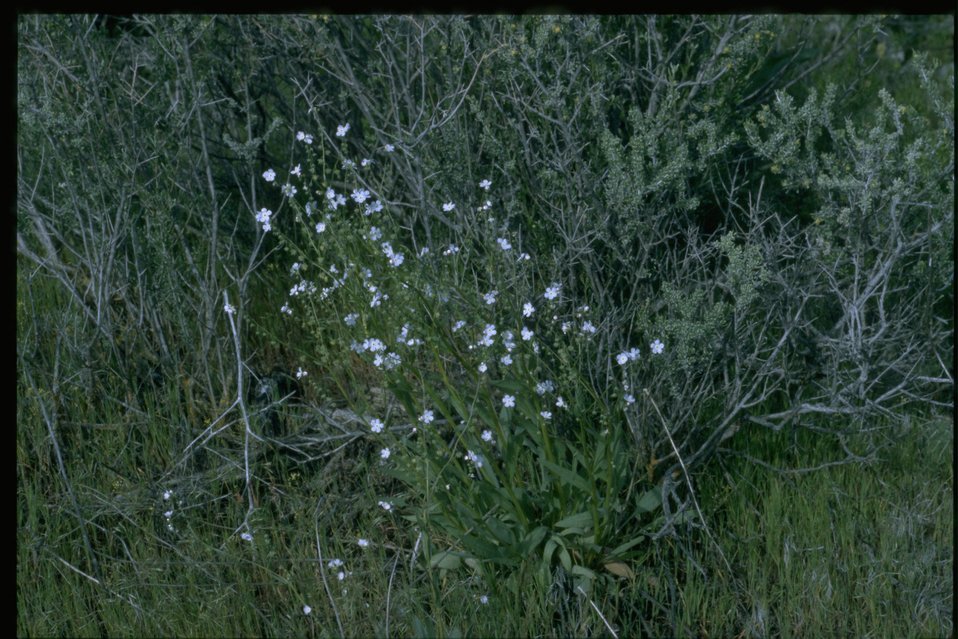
Farshot of Many-flowered Stickseed; Wild Forget-me-not wildflowers (Hackelia floribunda).